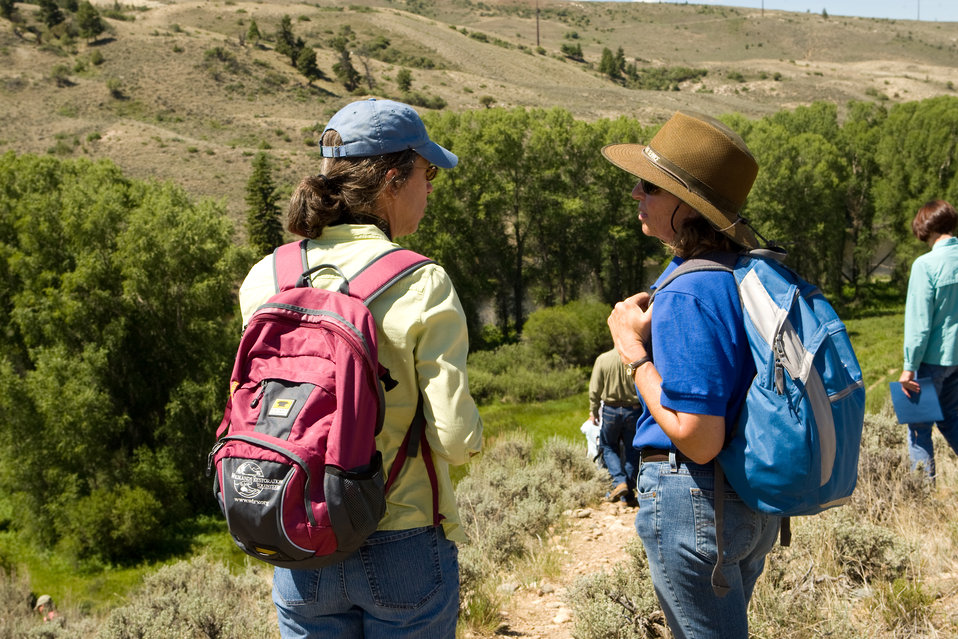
Colorado Rare Plant Conservation Initiative

The Colorado Rare Plant Conservation Initiative (RPCI) is a partnership of 23 statewide and regional agencies, private organizations, and academic institutions working to conserve 121 rare plants in Colorado. As part of these efforts the group developed the Colorado Rare Plant Conservation Strategy, developed Best Management Practices to reduce energy development impacts, addressed climate change, and developed focused strategies for the conservation of individual species at eight priority landscapes. The group has also worked to coordinate volunteer efforts for plant conservation across the state.